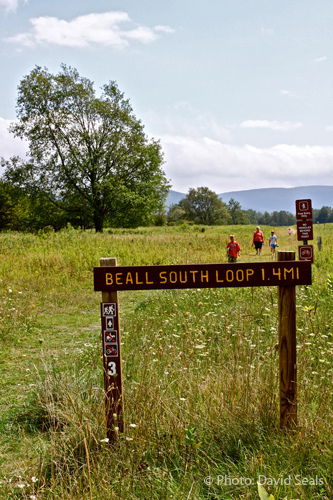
Beall South Loop Trail

A group of hikers use the Beall South Loop Trail, one of Canaan Valley National Wildlife Refuge's best loved trail.